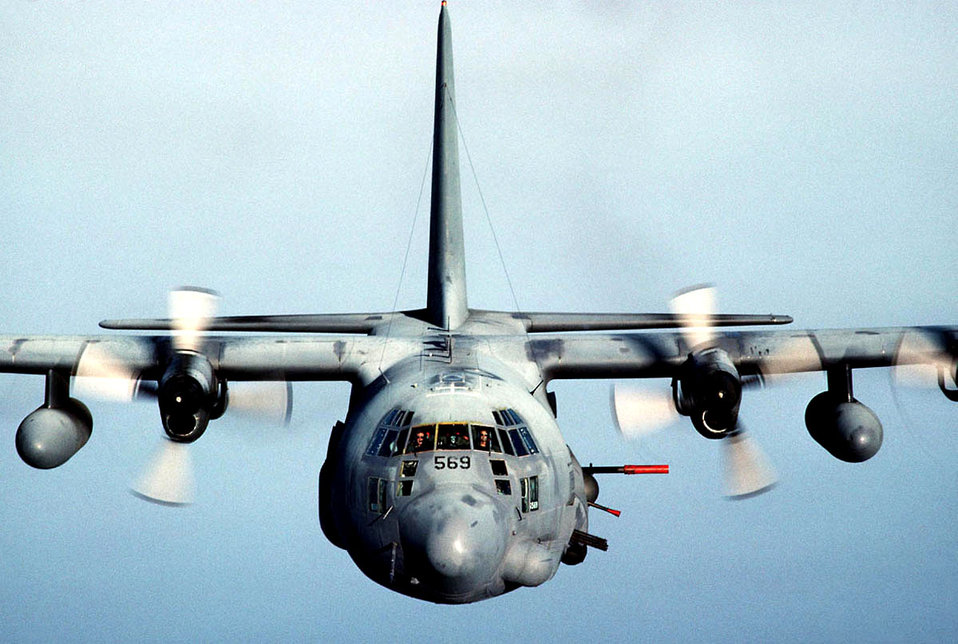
Aircraft attack al Qaeda haven, Ike moves off Somalia

Air Force AC-130 gunships struck al Qaeda targets in Somalia Jan. 8, news sources reported last night. Press reports said the AC-130 attacks hit an area called Ras Kamboni, a heavily forested area near the Kenyan border. The area is allegedly a terror training base. The AC-130 gunship's primary missions are close-air support, air interdiction and force protection.